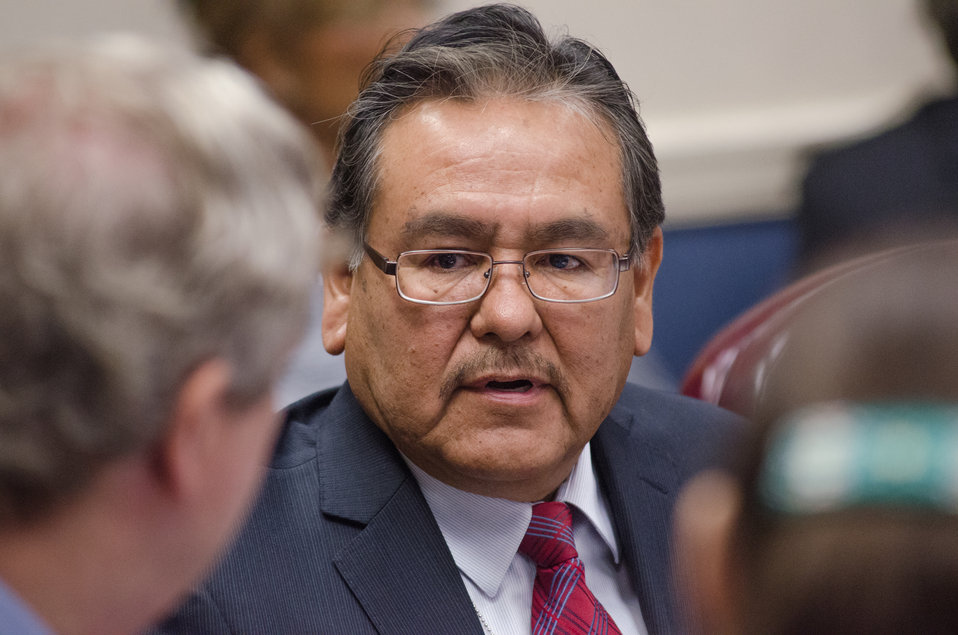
Navajo Technical College President Elmer Guy, Crownpoint, NM, talks with Agriculture Secretary Thomas Vilsack, left, during the USDA and American Indian Higher Education Consortium Leadership Group Winter Meeting, at the USDA Whitten Building, Williamsburg Room, in Washington D.C., on Friday, Feb. 8, 2013.